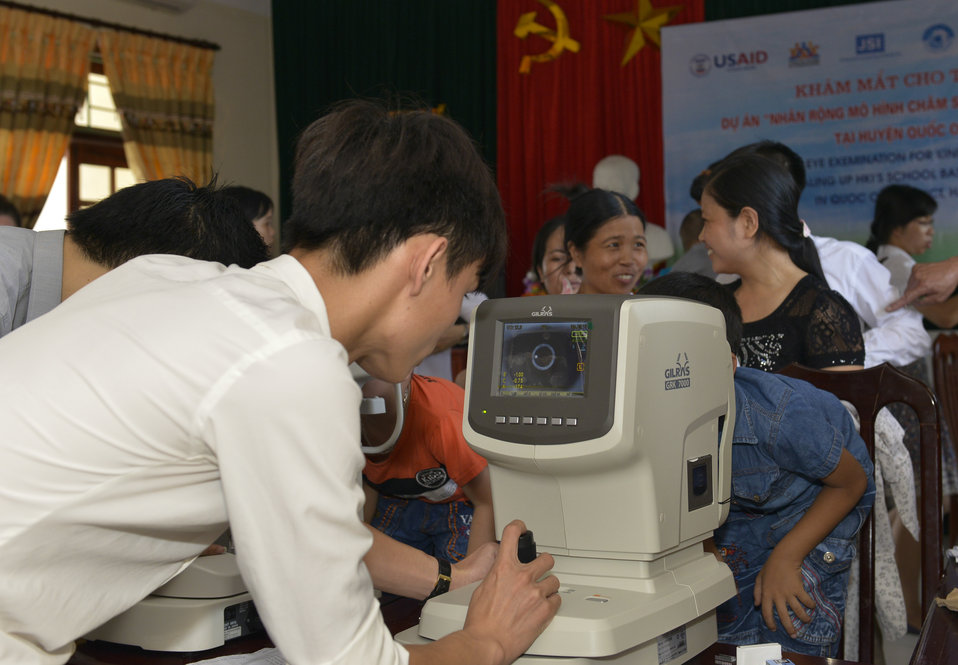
Eye screening for kindergarten children in Quoc Oai district of Hanoi

Quoc Oai, Hanoi. May 31, 2014.